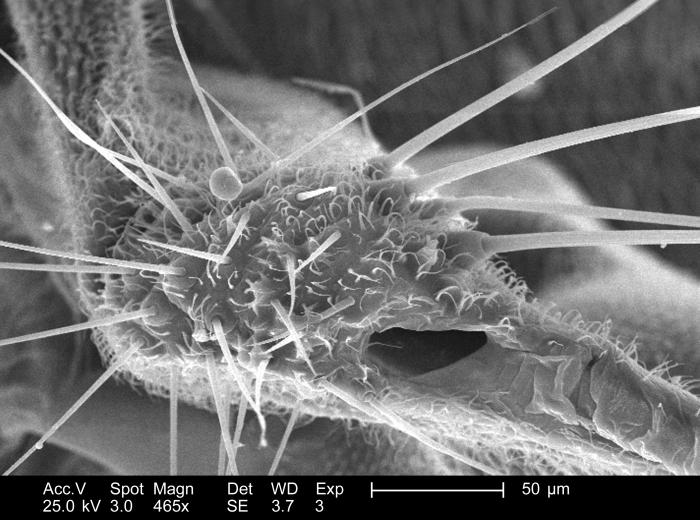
Magnified 465x, this scanning electron micrograph (SEM) depicted some of the morphologic details found associated with the wing attachment of an unidentified dragonfly, found deceased on the grounds of the Decatur, Georgia suburbs. Note the sensorial 'hairs', or 'setae', of various sizes emanating from the exoskeletal surface of the jointed wing segments. These hairs are sensitive to changes in the organism's environment including changes in temperature, wind speed and direction, chemical variations, and changes to the physical make-up of its surroundings, i.e., tactile interaction.